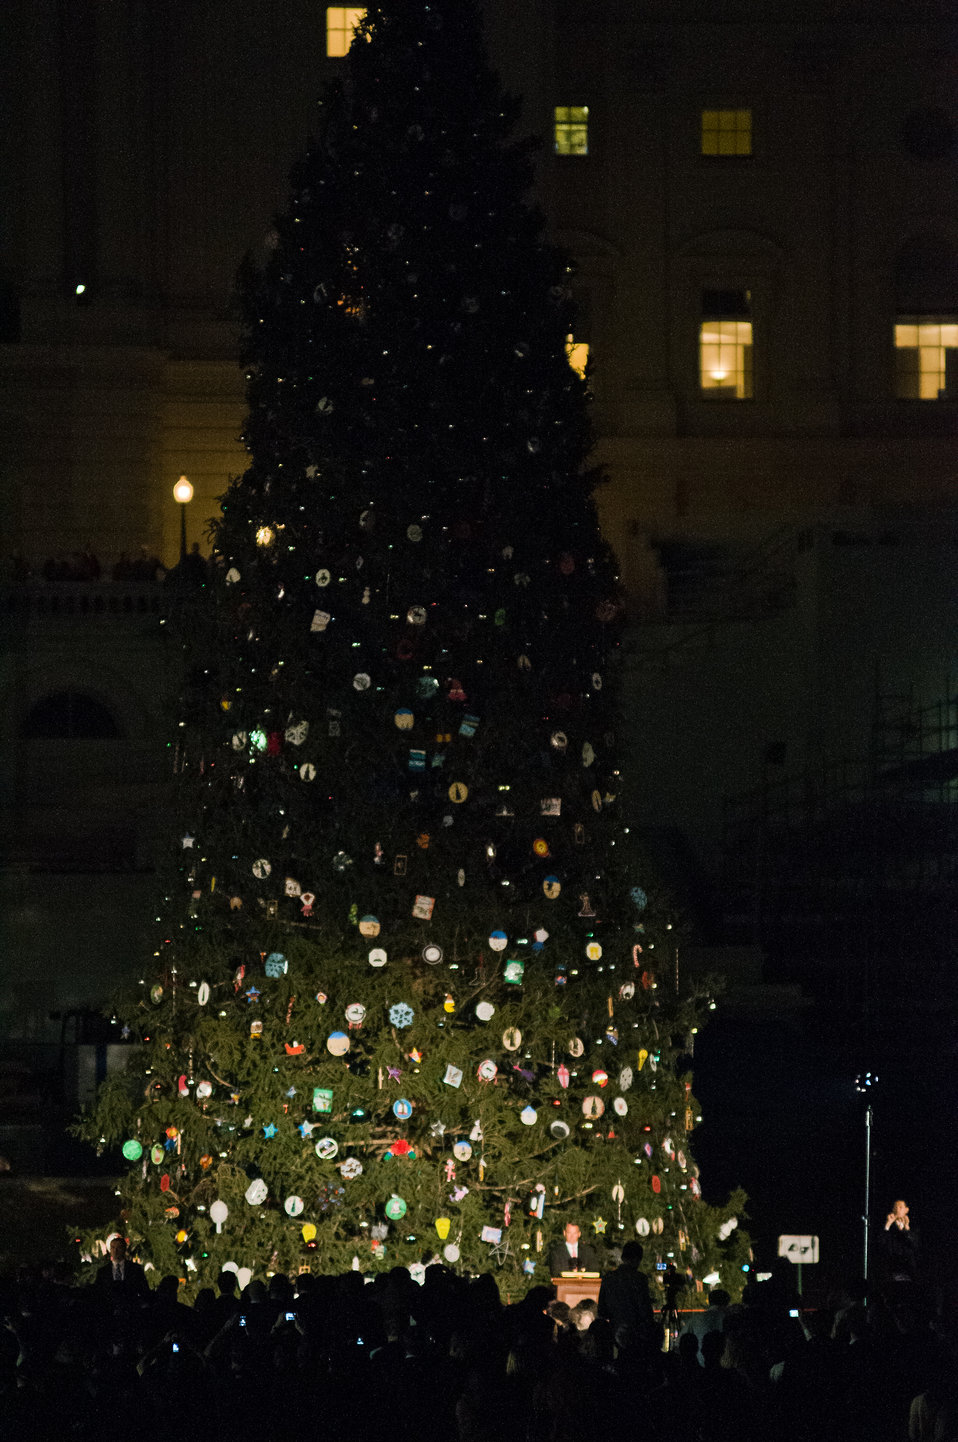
House Speaker John Boehner speaks before switching on the lights of the 2012 U.S. Capitol Christmas Tree from the Blanco Ranger District of the White River National Forest near Meeker, Colorado; and decorated with hand-made ornaments, on Tuesday, Dec. 4, 2012. Since November, the tree visited dozens of cities across the country as it made its way here on Nov.26, 2012. The 73-foot Englemann spruce traveled from the White River National Forest in Colorado. Other representatives as well as Natural Resources and Environment Under Secretary Harris Sherman spoke during the festivities.